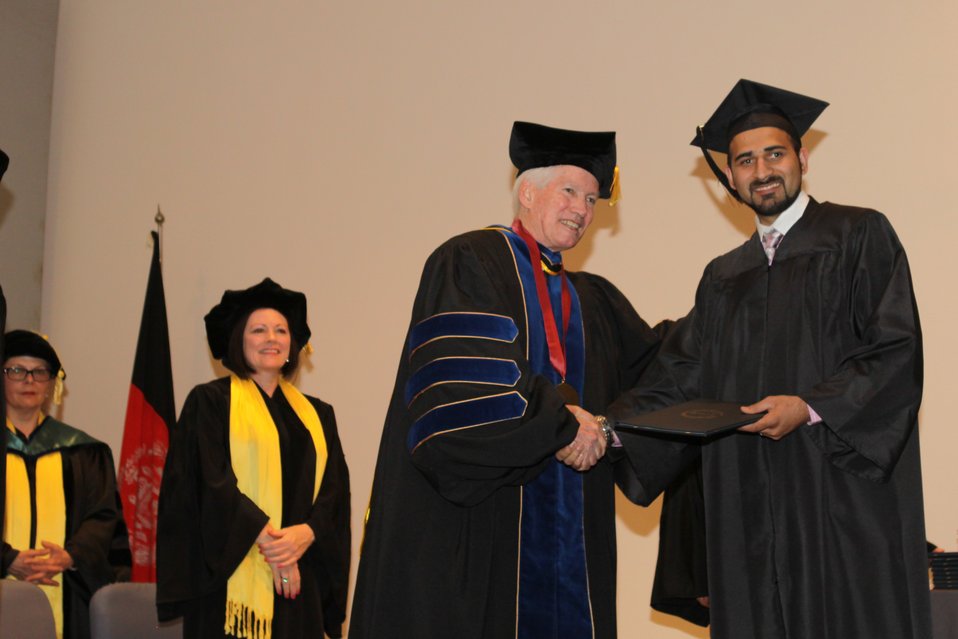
100526 AUAF Graduation 278